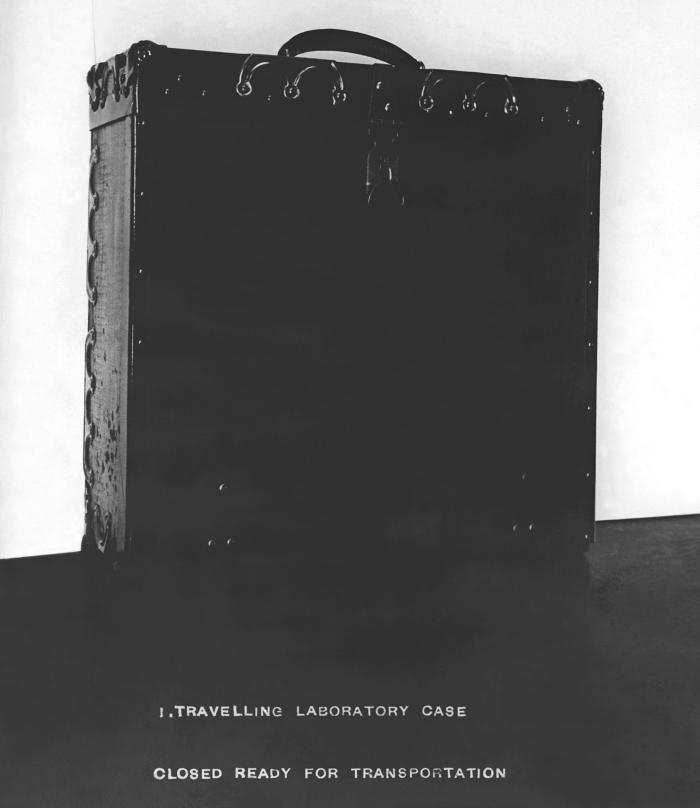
This 1916 photograph depicted a traveling laboratory case that has been closed, and made ready for transportation. A view of the packed case, open for view, can be seen in PHIL #8504, and an image of the case open, and emptied to display its contents, and ready for work can be seen in PHIL #8505.